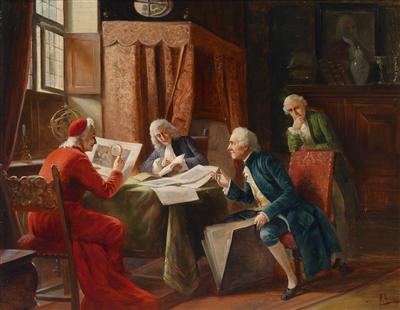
Deutsch: Die Kunstliebhaber, signiert A. Knoop, Öl auf Platte, 30 x 36 cm